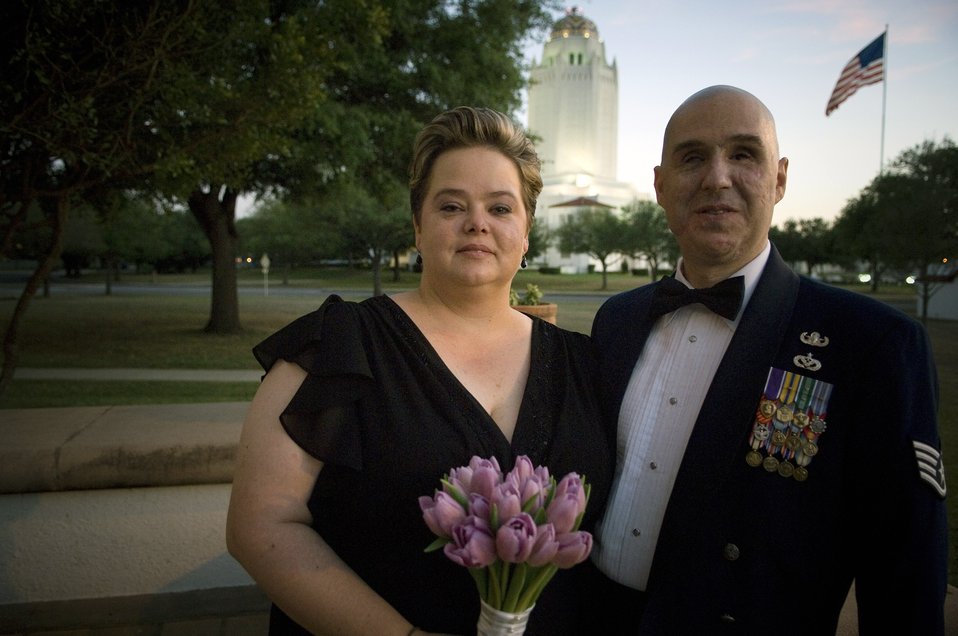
Wounded Warrior: Air Force family helps Purple Heart recipient, wife

Staff Sgt. Matthew Slaydon and his wife, Annette, pause outside the Randolph Air Force Base, Texas, chapel at their wedding vow renewal ceremony April 12. Sergeant Slaydon was critically wounded by a terrorist bomb in Iraq in October 2007. His wife and a host of Air Force members at Randolph and his home station of Luke Air Force Base, Ariz., have helped Sergeant Slaydon focus on recovery.